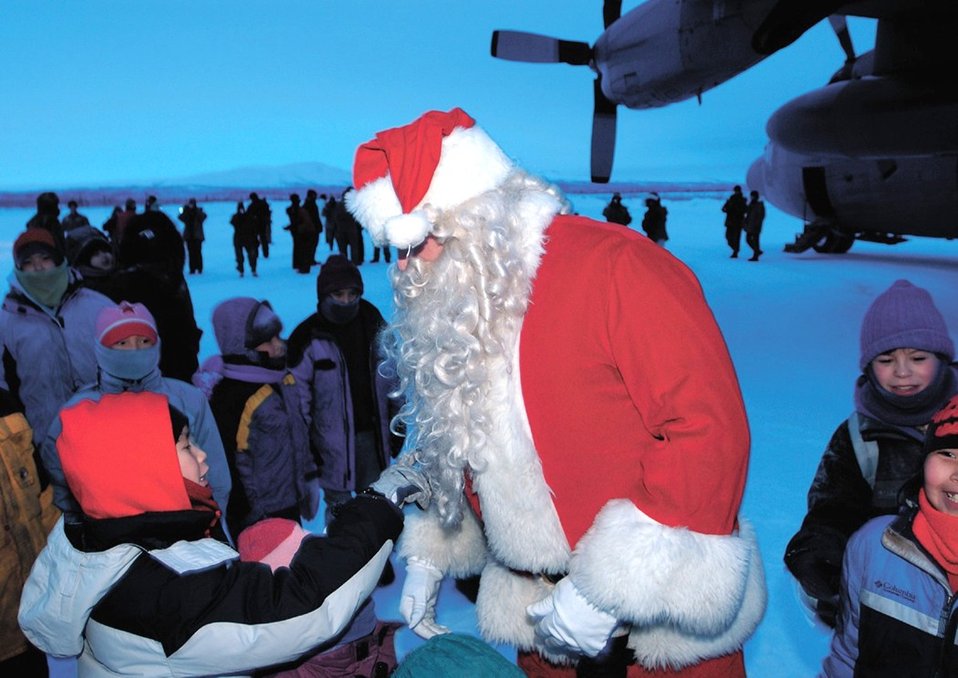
Hi, Santa!

ARCTIC VILLAGE, Alaska -- Children here greet Santa Claus recently. The Alaska-native community is north of the Arctic Circle where Santa delivered gifts and supplies for the 37th year in a row. Santa traveled to the village on a C-130 Hercules from Elmendorf Air Force Base's 517th Airlift Squadron.